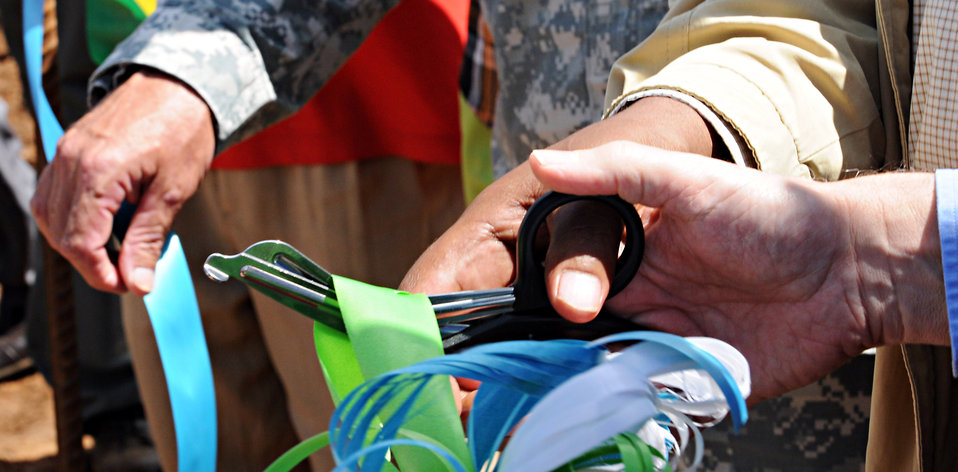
144 hours in Ethiopia: The Negele Borena Bridge

With the crisp cut of scissors, Tasfaayee Iyyaddanee Warree, the mayor of Negele Borena, Ethiopia, and the Honorable Donald Booth, the U.S. ambassador to Ethiopia, officially dedicate the Negele Borena Bridge on Dec. 6, 2011. The bridge, which was constructed in five months, is designed to provide safe passage for pedestrians and livestock.